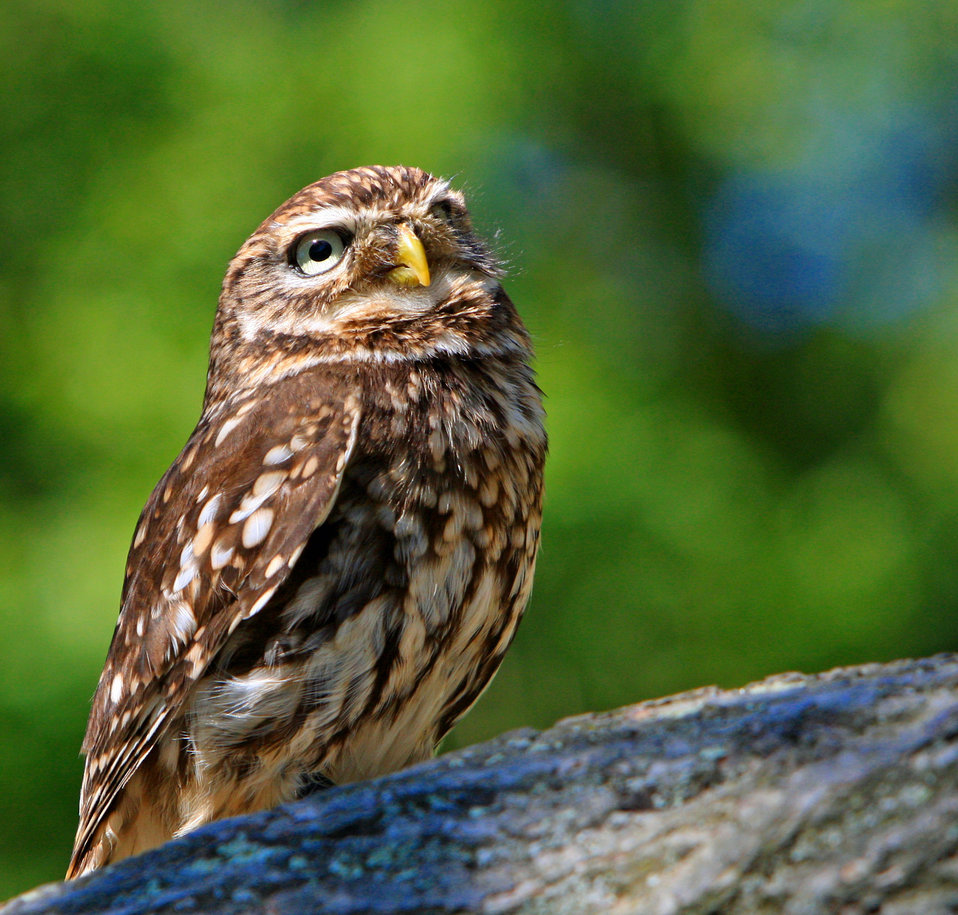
Owl portrait

Beautiful close-up portrait of a cute little owl bird.